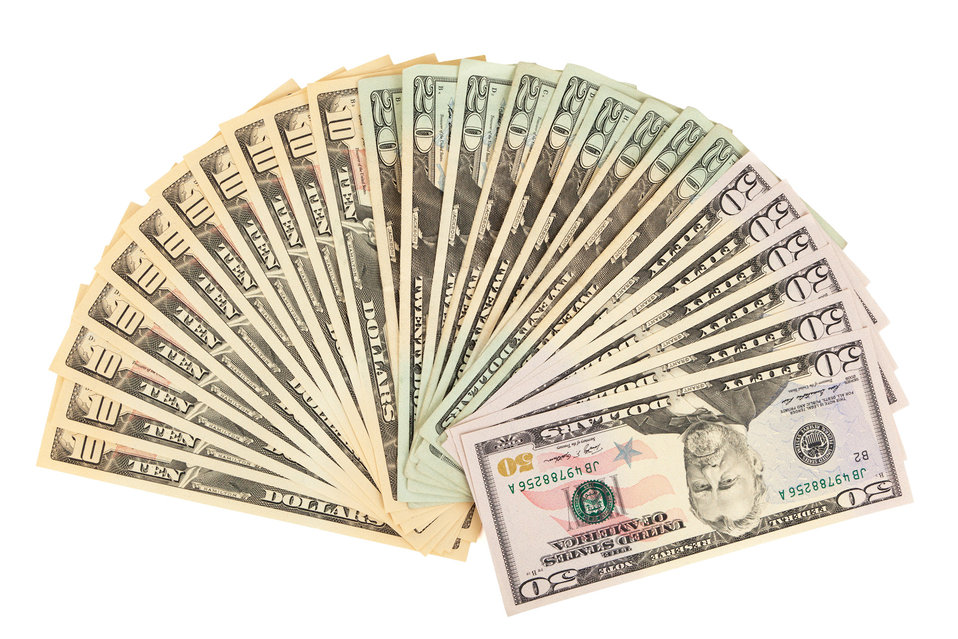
Fan of dollars isolated on white background.